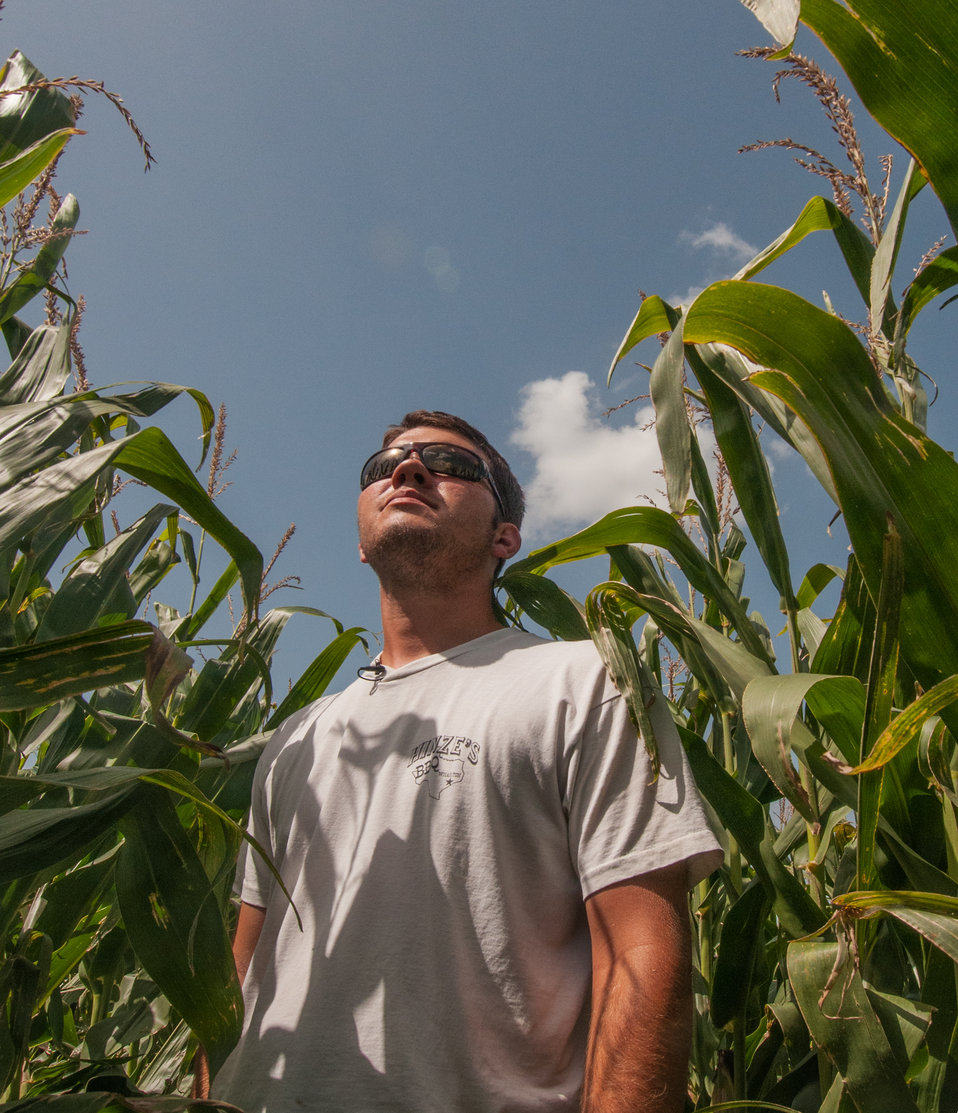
Philip Marek checks the health of a crop of #2 yellow corn at his father's farm in Wharton County, TX on Jun. 20, 2013. Philip Marek has been a farm owner since 2010 and started with 210 acres. Marek and his cousin Josh Marek were able to use a U.S. Department of Agriculture (USDA) Farm Services Agency (FSA) small and new farmer and rancher loan programs provided them the ability to handle initial business start-up and equipment purchase.